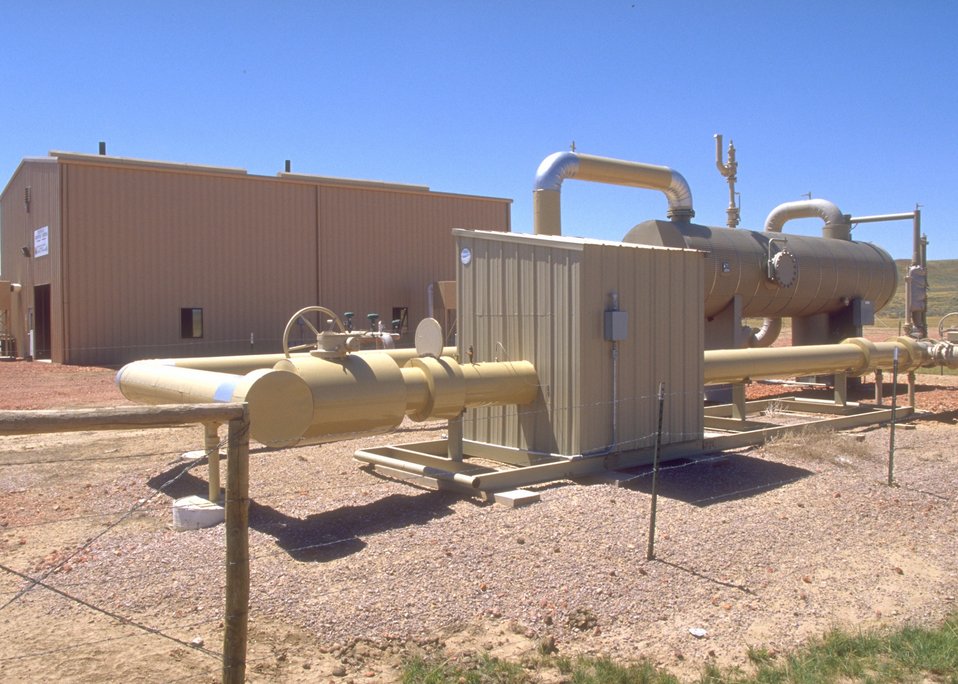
Facilities used in the production of coal bed methane, Buffalo Field Office.